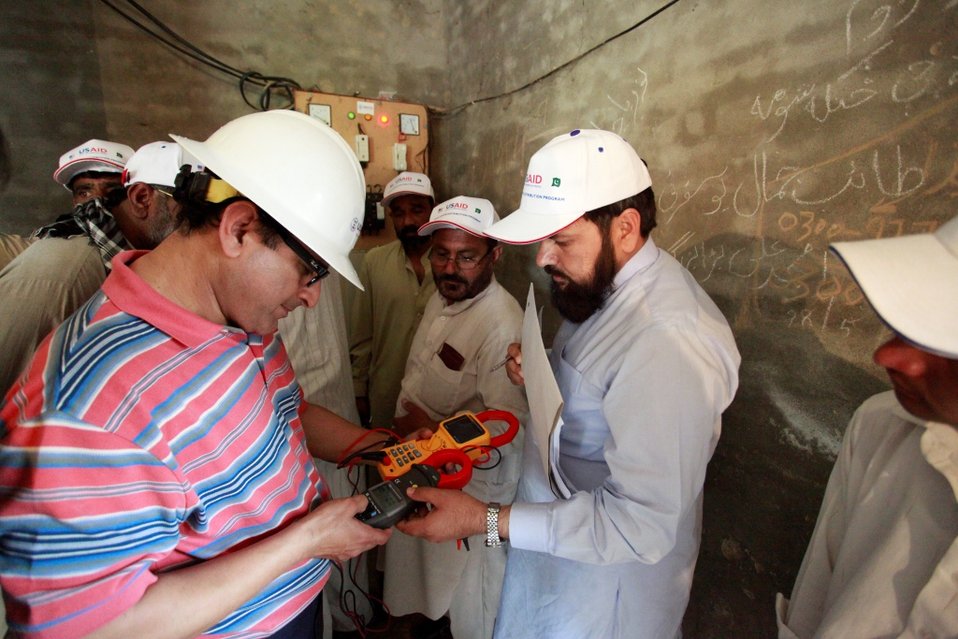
Usaid To Provide Technical Assistance To Improve Efficiency Of Tube-Wells In Iesco By Installing 2600 Lt Capacitors at Islamabad on April 26, 2012